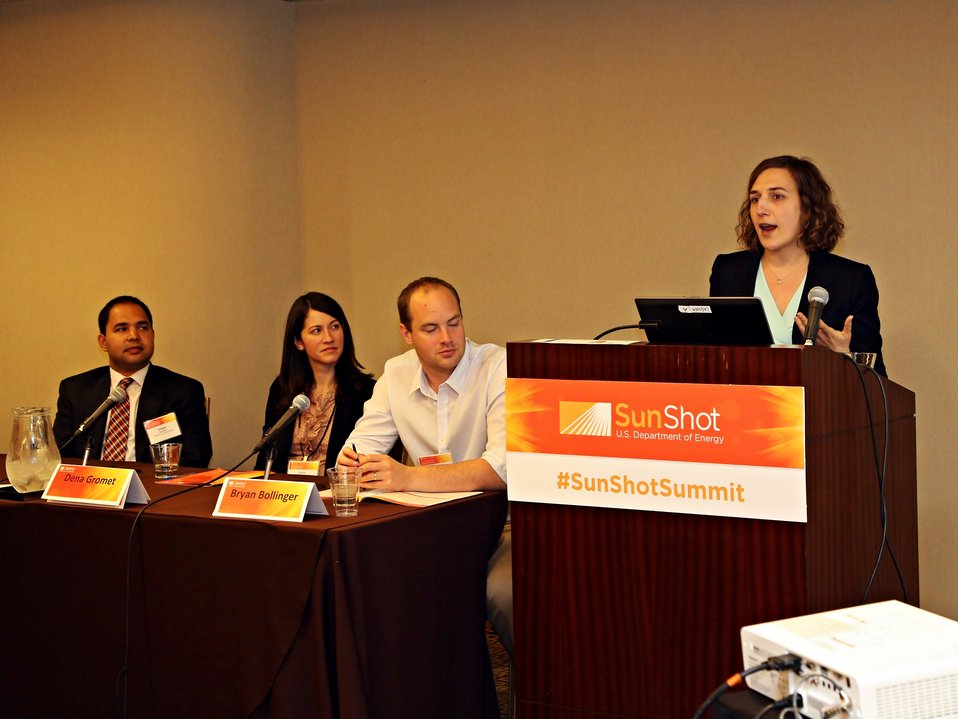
Breakout Sessions 4